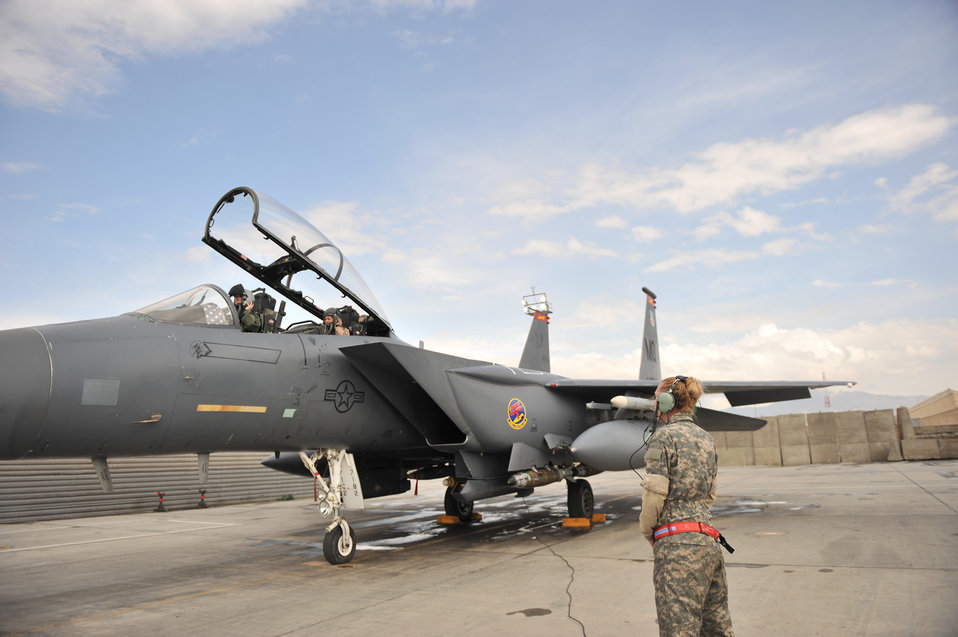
All-female F-15 crew

Staff Sgt. Tamara Rhone waits for members of an all-female crew before take off March 29, 2011, at Bagram Airfield, Afghanistan. Members of the 389th Expeditionary Fighter Squadron helped make this combat mission the first to be flown, planned and maintained entirely by females. Rhone is a 455th Expeditionary Aircraft Maintenance Squadron crew chief.